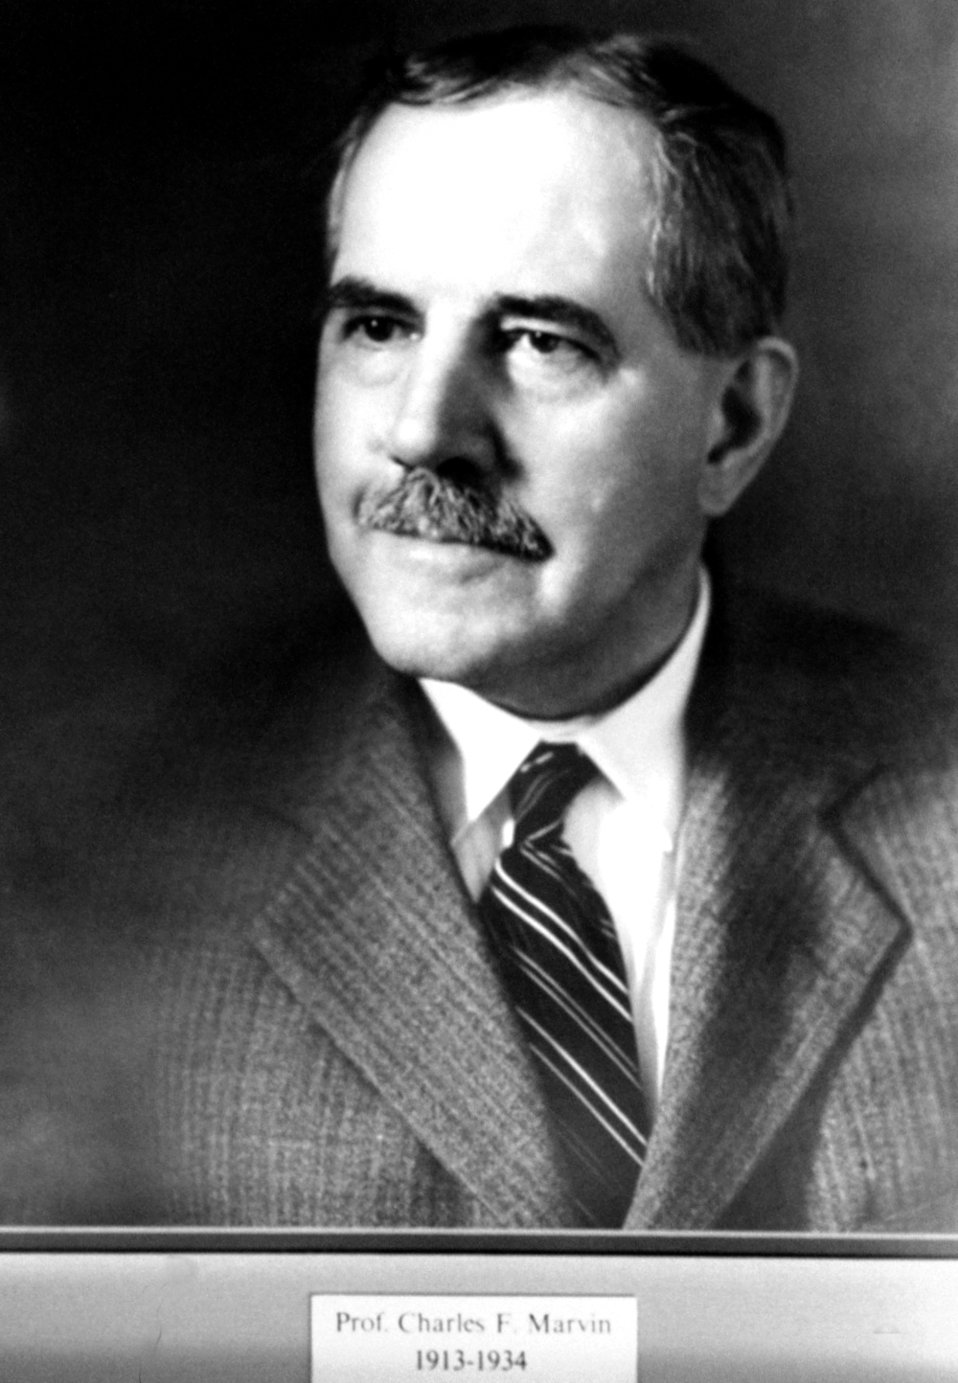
Professor Charles F. Marvin, head of the Weather Bureau 1913-1934.